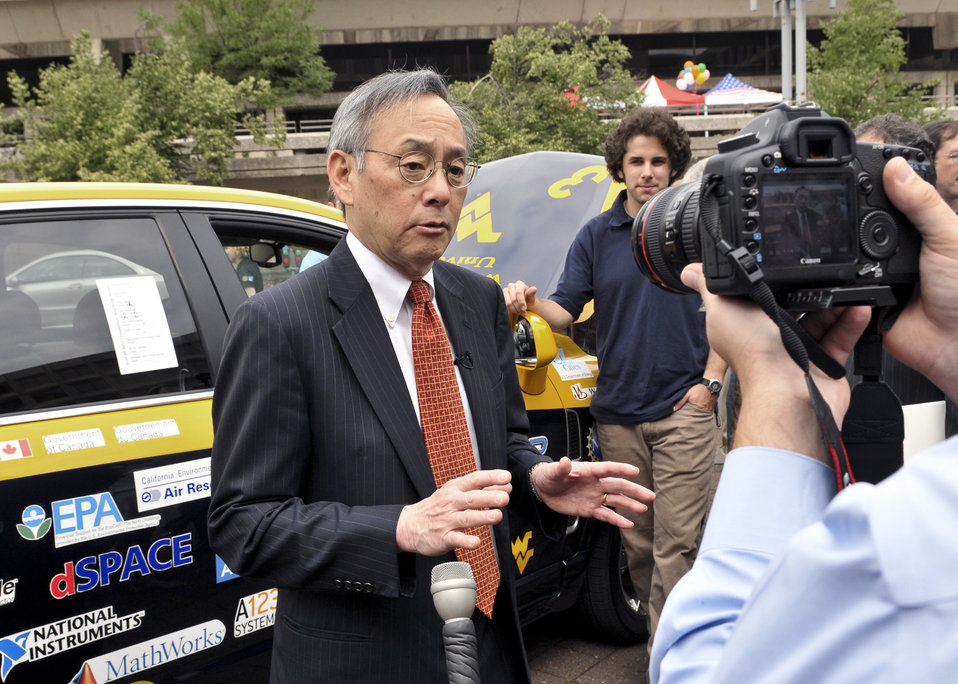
EcoCAR Challenge Finish Line 5 of 8

Secretary Steven Chu discusses the EcoCAR Challenge during the 'Finish Line' event held at the US Department of Energy headquarters in Washington, DC.